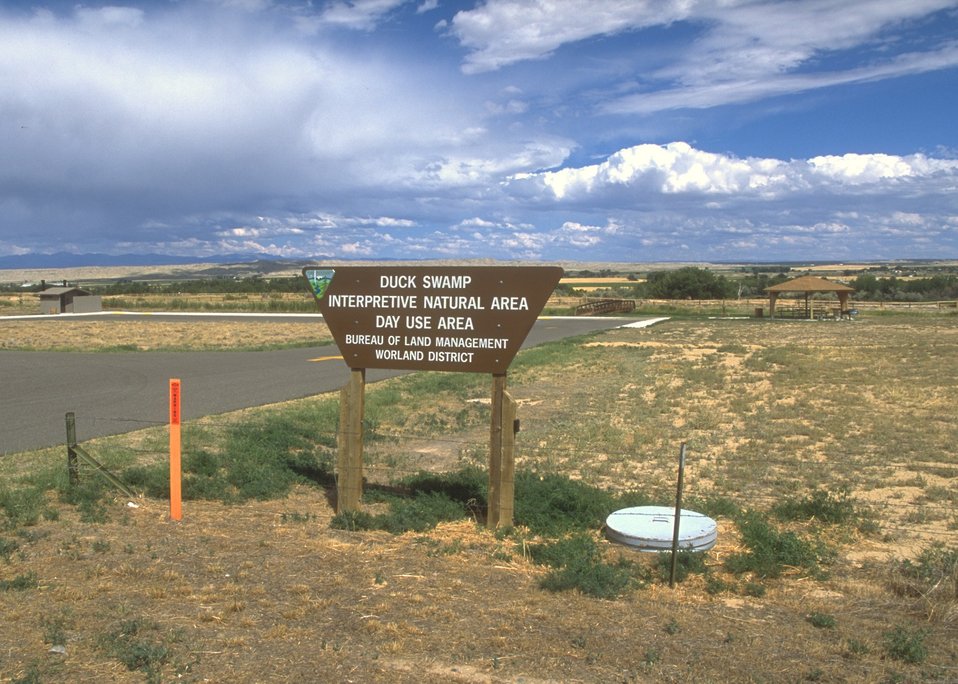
Duck Swamp Interpretive Area, Worland Field Office.